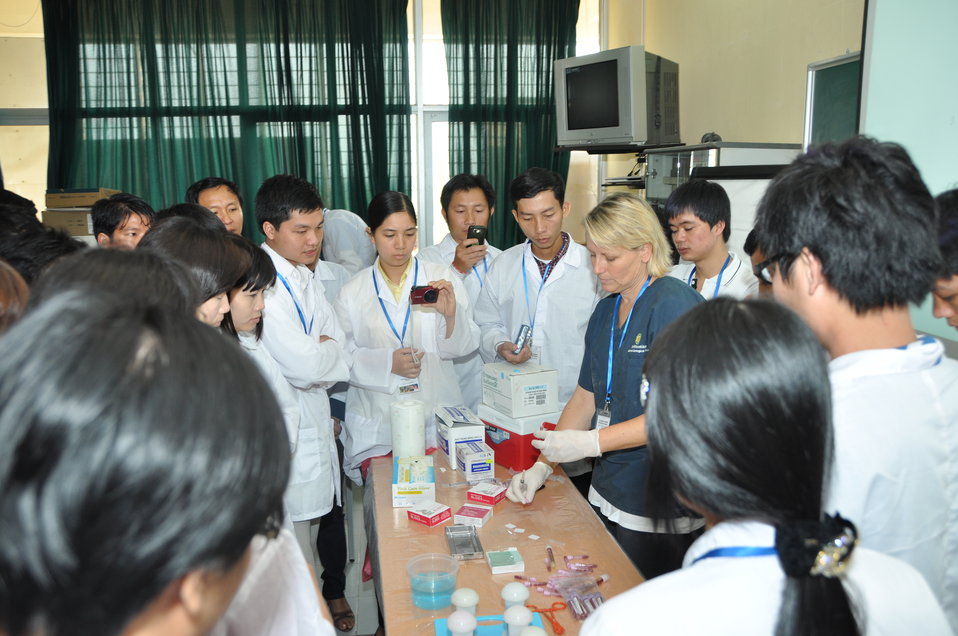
USAID EPT Smithsonian Pathology Training to Detect Emerging Infectious Diseases Wildlife and Other Animals in Vietnam Workshop